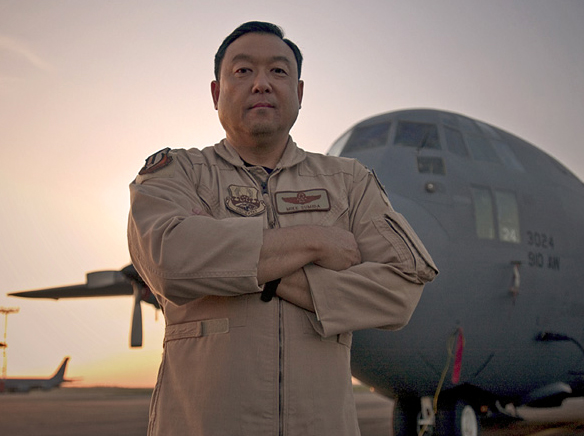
Reflecting back

MANAS AIR BASE, Kyrgyzstan -- Col. Michael Sumida stands in front of a C-130 Hercules on the flightline here. The colonel was a C-130 navigator on the attempted mission to rescue hostages during the Iranian hostage crisis in 1980. April 24 and 25 mark the 24th anniversary of the attempt. He is the 376th Air Expeditionary Wing vice commander.